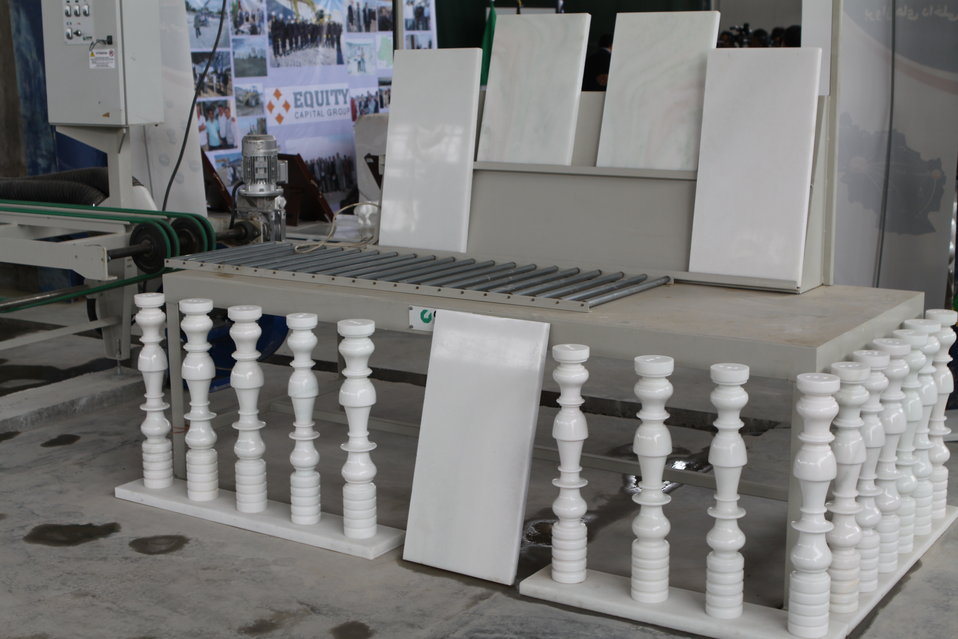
100525 Hirat Marble Conference 185